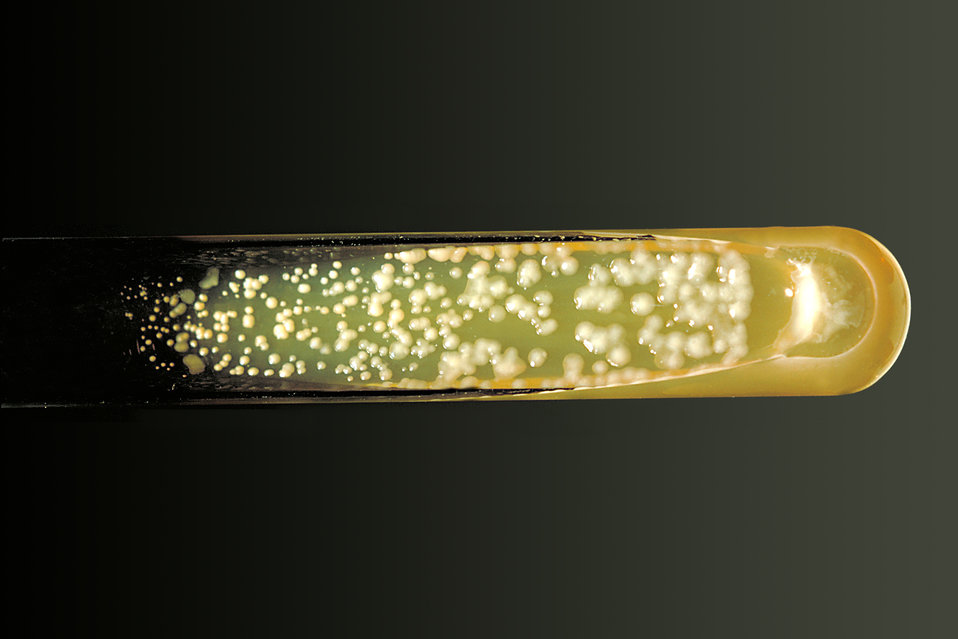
Pictured is a Sabouraud dextrose agar slant culture of the fungus Cryptococcus neoformans grown at 37�C.